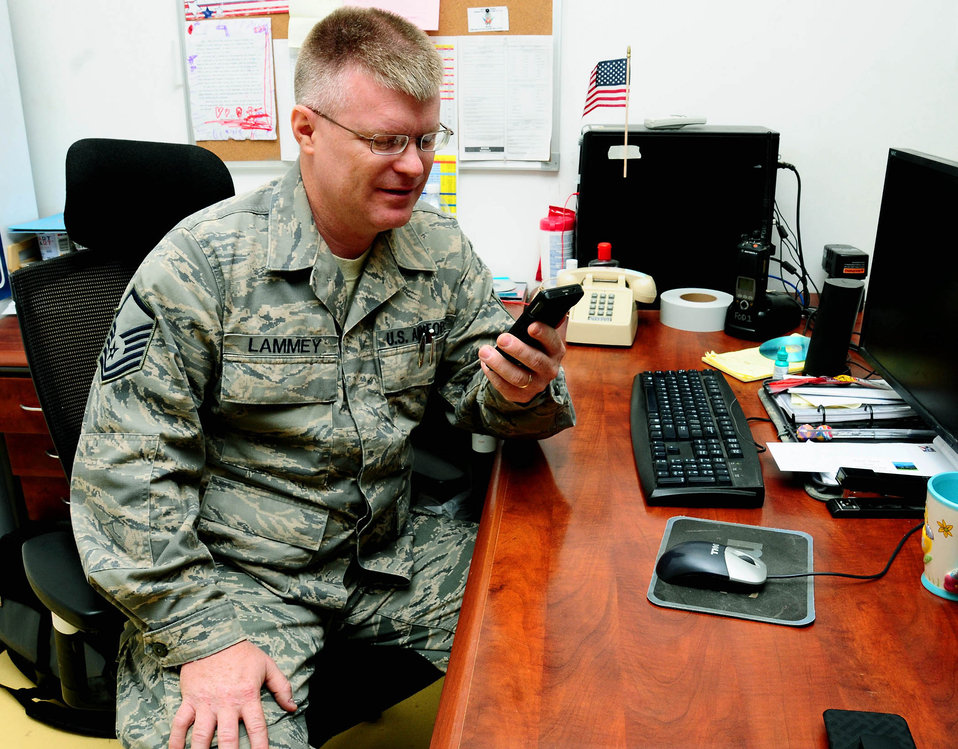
A father's love

Master Sgt. Roger Lammey, a 332nd Air Expeditionary Wing foreign object damage prevention monitor, speaks to his family via the Internet.